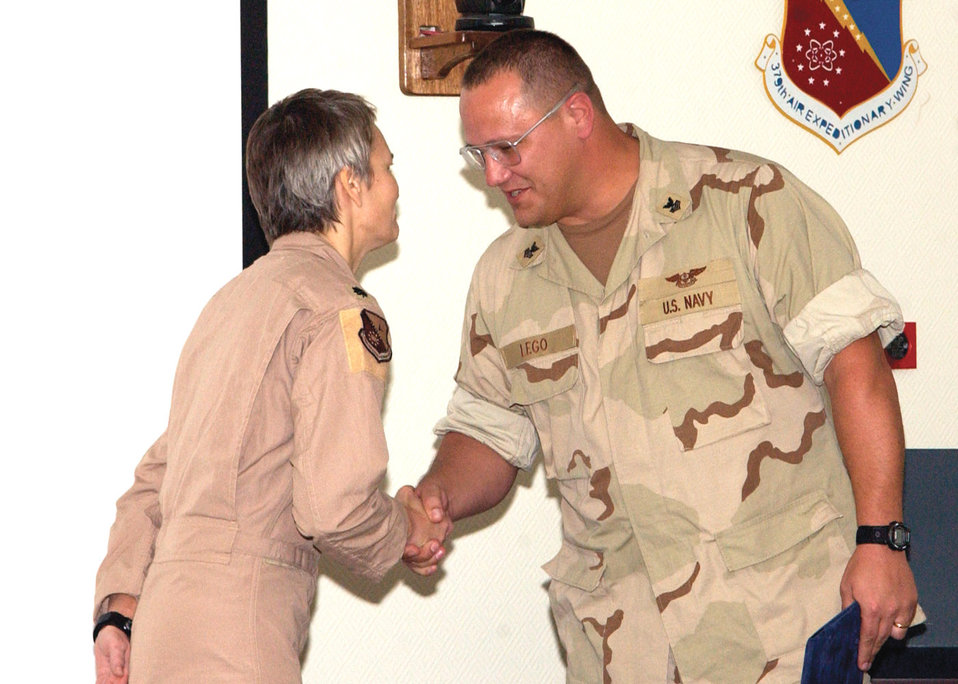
Sailor saves Airman's life

SOUTHWEST ASIA -- Lt. Col. Lois MacDonald (left) 379th Expeditionary Medical Group Medical Operations Flight commander thanks Petty Officer 1st Class Jerry Lego, Fleet Air Reconnaissance Squadron One structural mechanic for saving her life by performing the Heimlich maneuver on her at the base dining facility here Oct. 28. Petty Officer Lego is a former Heimlich maneuver instructor.